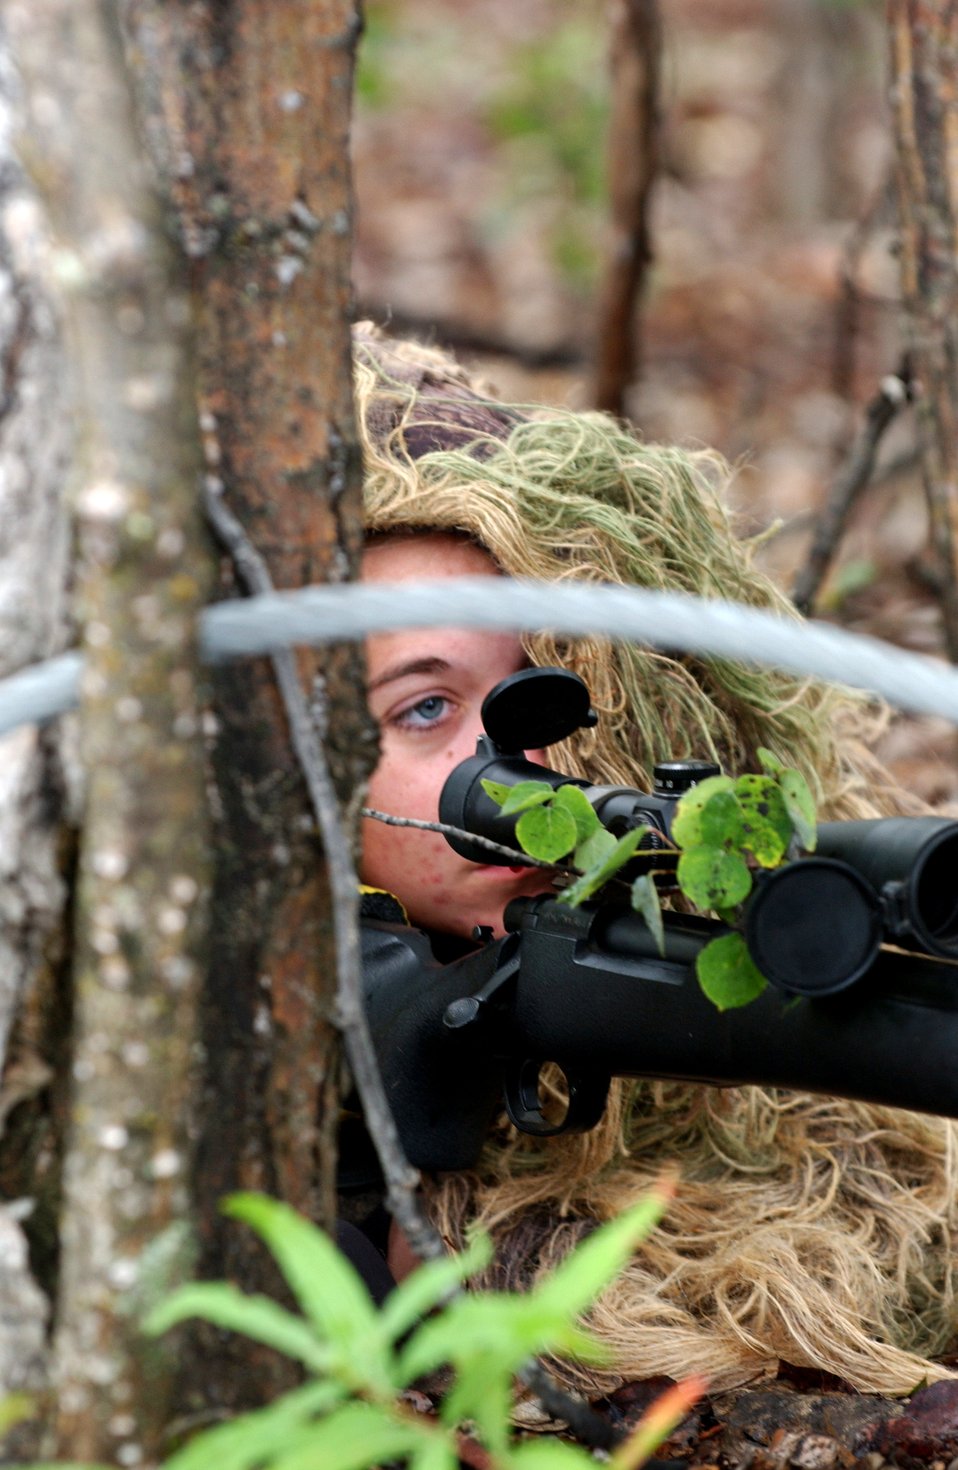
Under cover

Airman 1st Class Kristin Ferris positions herself in the brush during an exercise at Eielson Air Force Base, Alaska, on Aug. 8. Airman Ferris is one of five enlisted female snipers in the Air Force and participated in a training exercise to eliminate a terrorist in a hostage situation. She is assigned to the 354th Security Forces Squadron.